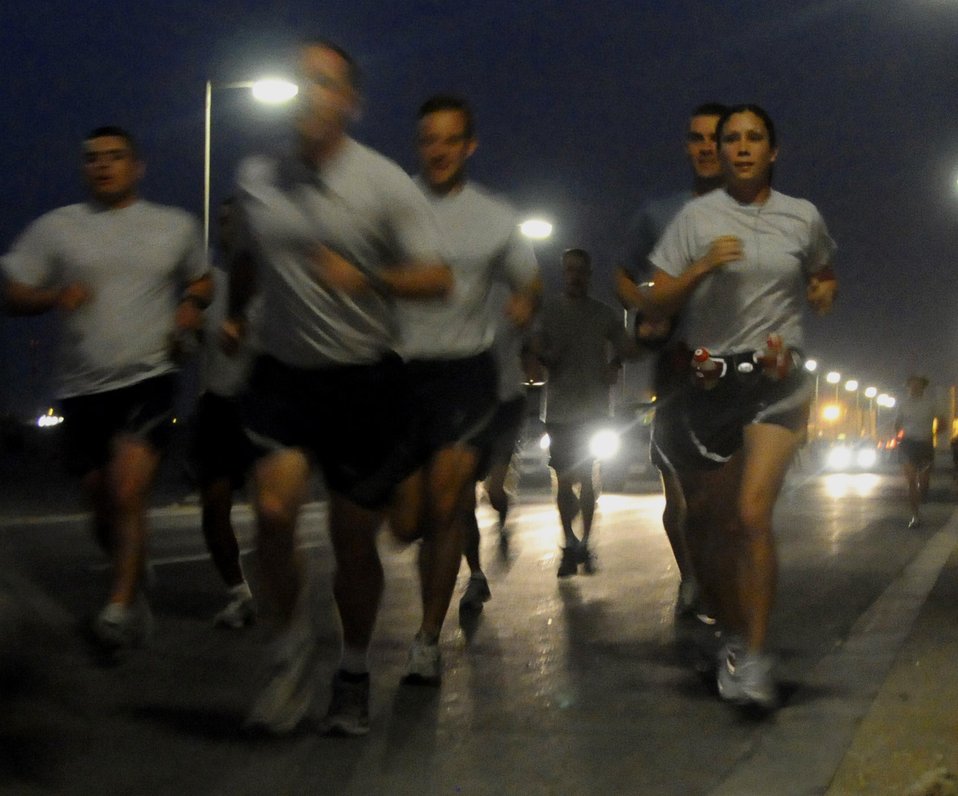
Mother daughter race together

1st Lt. Jessica Lopez (far right) begins a marathon with a group of fellow Air Force runners March 2 in Southwest Asia. The wing organized a 5k race for members to compete in and support the lieutenant, who was running at the same time as her mother, Dawn, who was running in the L.A. Marathon.